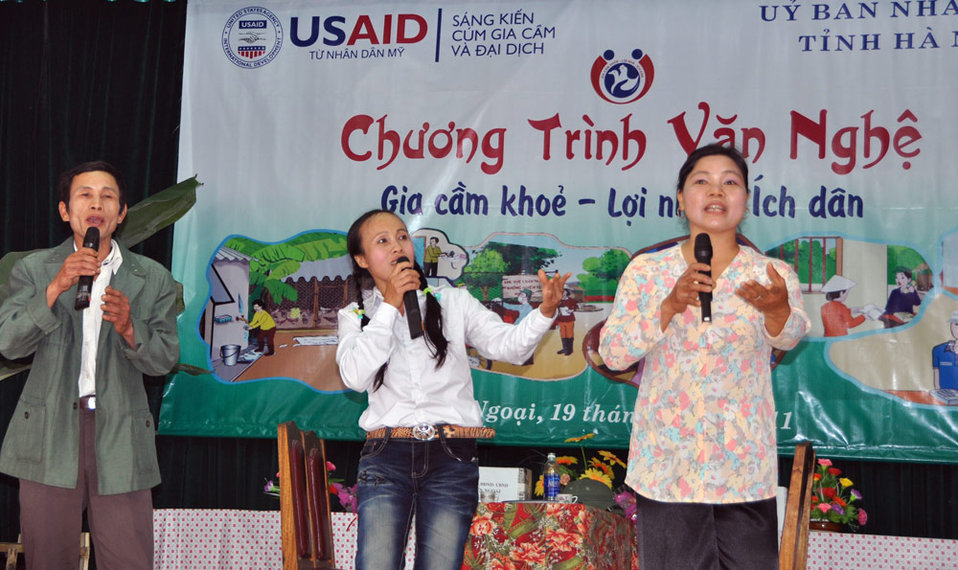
Residents in Vietnam's Tien Ngoai Commune, Duy Tien District, Ha Nam Province, discuss ways to prevent and control avian and pandemic influenza.